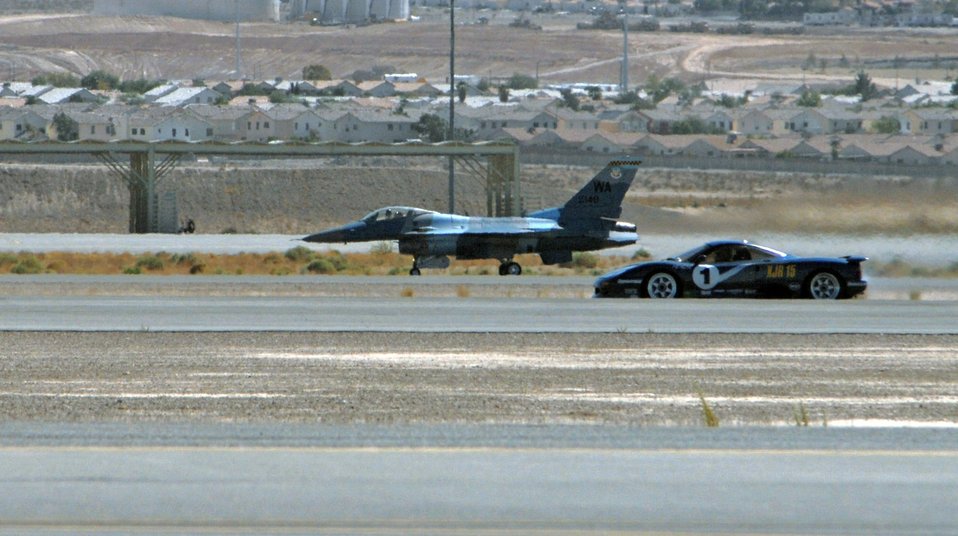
Airmen test their limits at autocross

An F-16 Fighting Falcon, one of the Air Force's most powerful single-engine fighters, races an XJR15 Jaguar down a one-mile stretch of runway Sept. 29 at Nellis Air Force Base, Nev . The F-16 won the race, one of three special events held during the two-day Nellis Autocross.